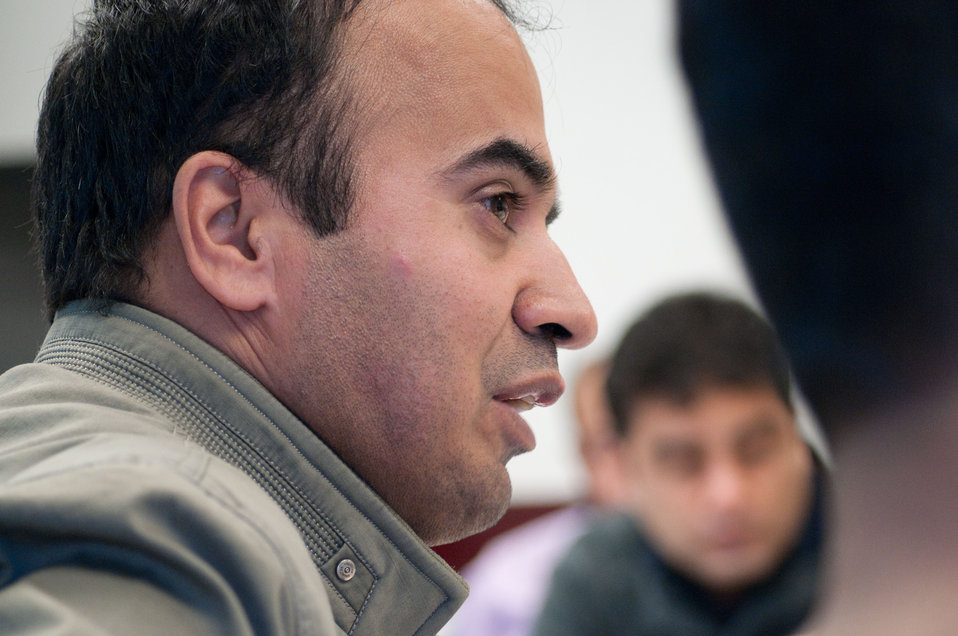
Afghan Ministry of Agriculture's Borlaug Fellows listened to U.S. Department of Agriculture (USDA), Agriculture Research Service (ARS) representatives during a visit to the George Washington Carver Center, in Beltsville, MD on Wednesday Sept. 21, 2011.